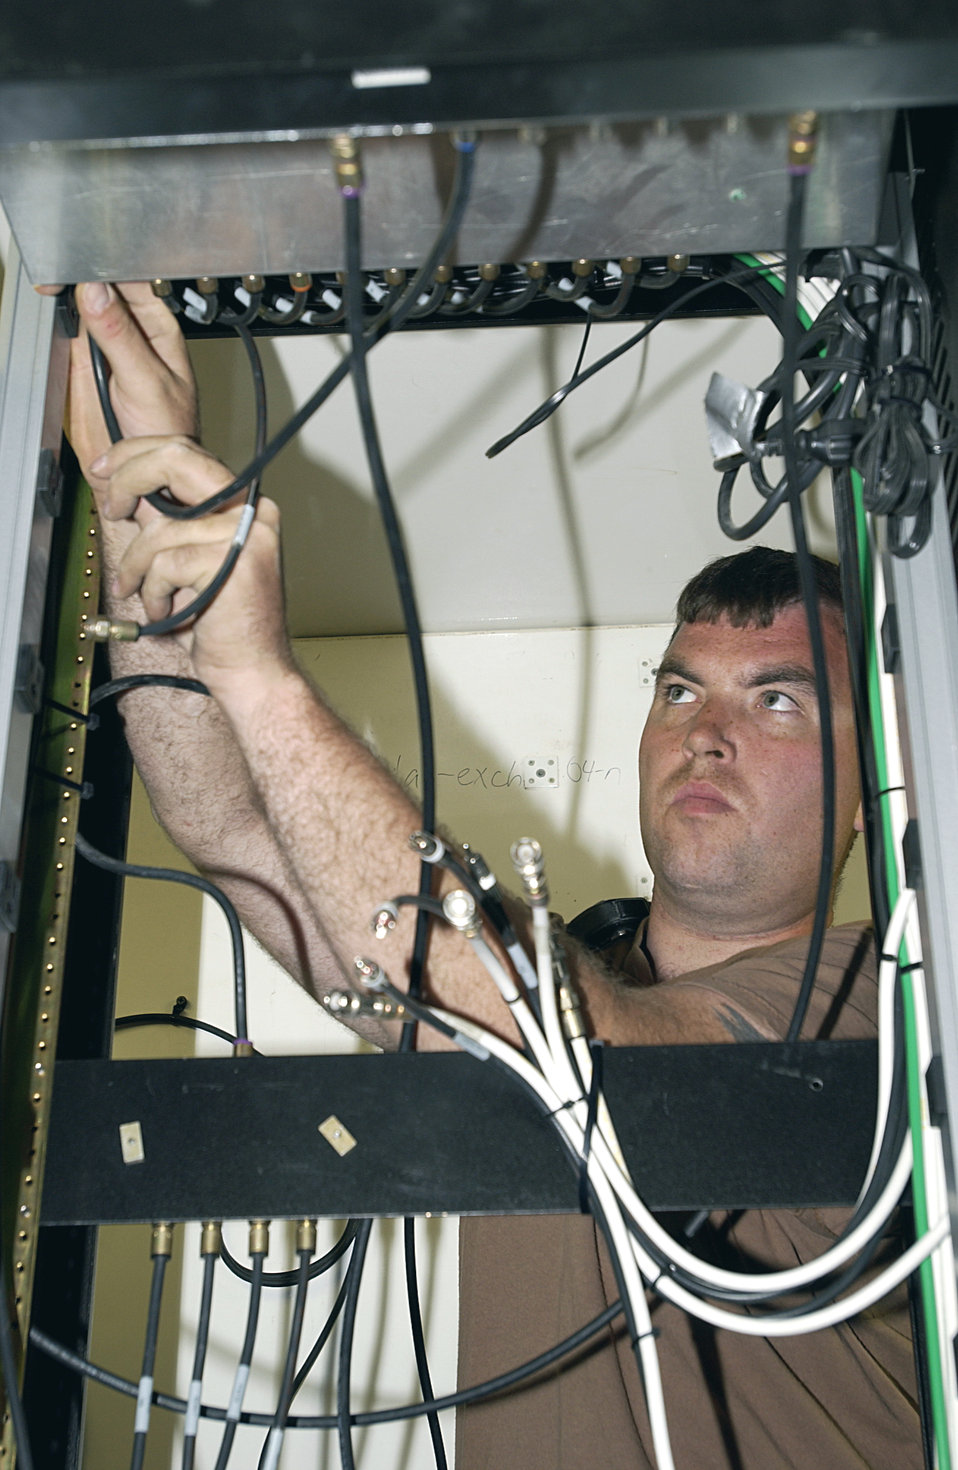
Bringing AFN to Iraq

TALLIL AIR BASE, Iraq -- Staff Sgt. Jerry Millard installs a new American Forces Network distribution system here recently. The system will enable Tallil AB to receive six AFN television channels and two AFN radio channels. Sergeant Millard is a satellite communications technician assigned to the 407th Expeditionary Communications Squadron.